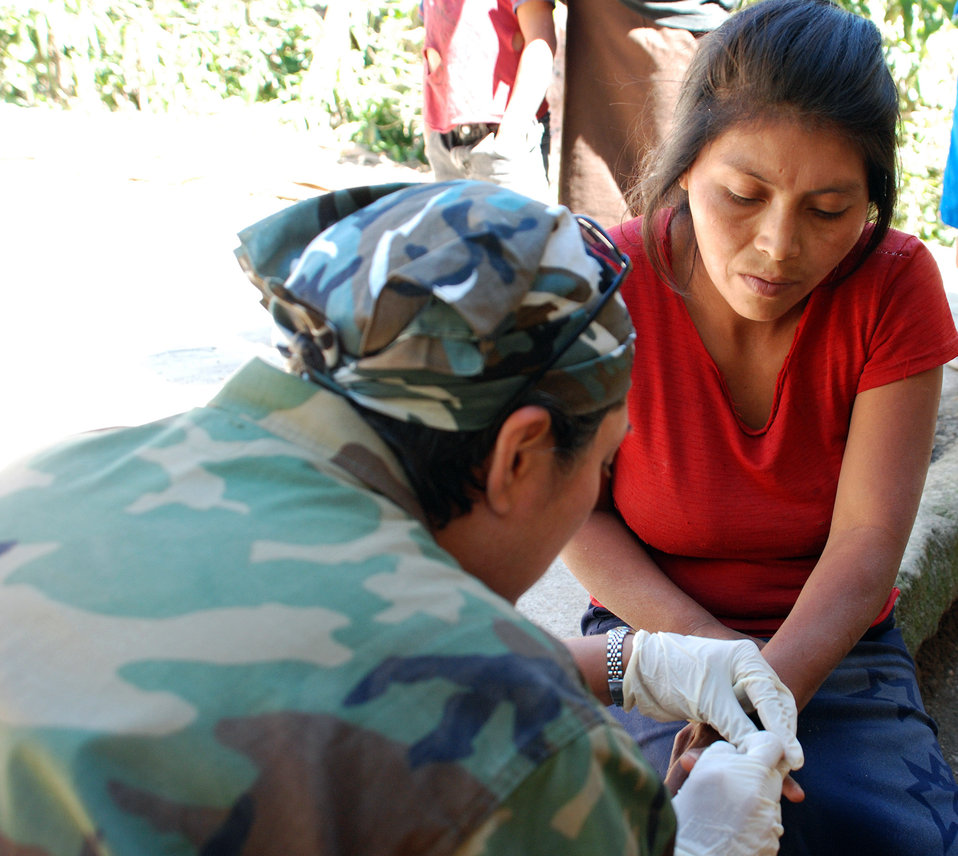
Medical team hikes into Honduran mountains to care for children

U.S. Navy Cmdr. Sandra Hearn administers a blood test to screen for anemia for a local mother living in the remote village of Marcala, Honduras. Commander Hearn was one of 16 Americans who traveled here from the United States to take part in a pediatric nutrition medical readiness training exercise, screening children and mothers for anemia and educating them on nutrition. The team partnered with specialists from the Honduran Ministry of Health and the medical element of Joint Task Force-Bravo, based at Soto Cano Air Base, Honduras.